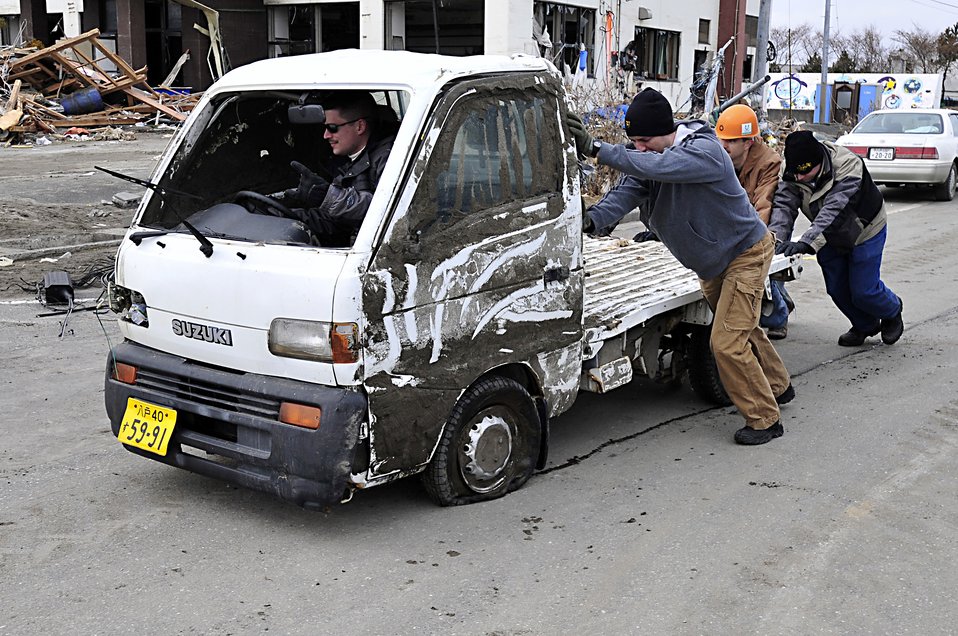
Misawa Air Base lends a helping hand

MISAWA AIR BASE, Japan -- Airmen push an abandoned vehicle to the side of the road at the Misawa City port Mar. 15. Airman and Sailors are urged to volunteer their time to help the local community.